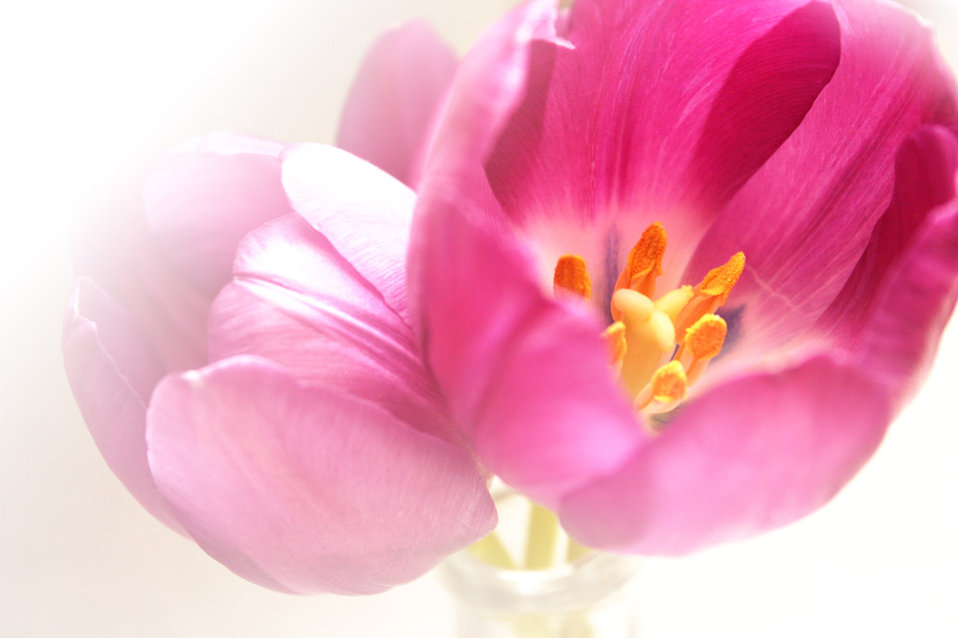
Tulips

Spring tulips.